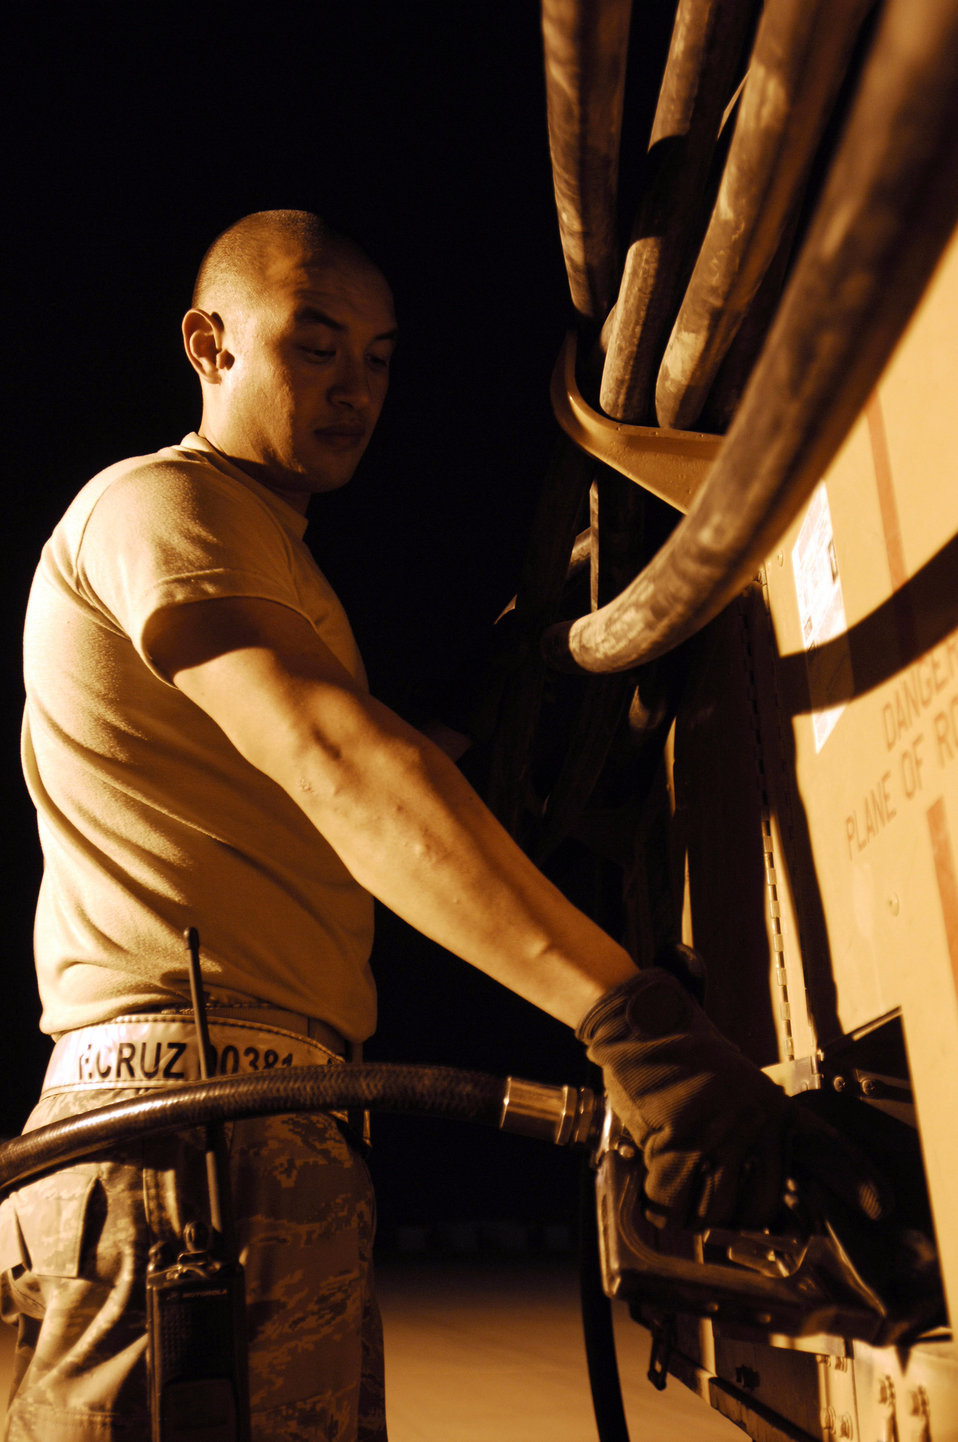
Lurking in the shadows

Senior Airman Fred Cruz refuels a generator Sept. 24 at Joint Base Balad, Iraq. Airman Cruz is an aerospace ground equipment journeyman with the 332nd Expeditionary Maintenance Squadron and deployed from Shaw Air Force Base, S.C. His hometown is Sonora, Calif.